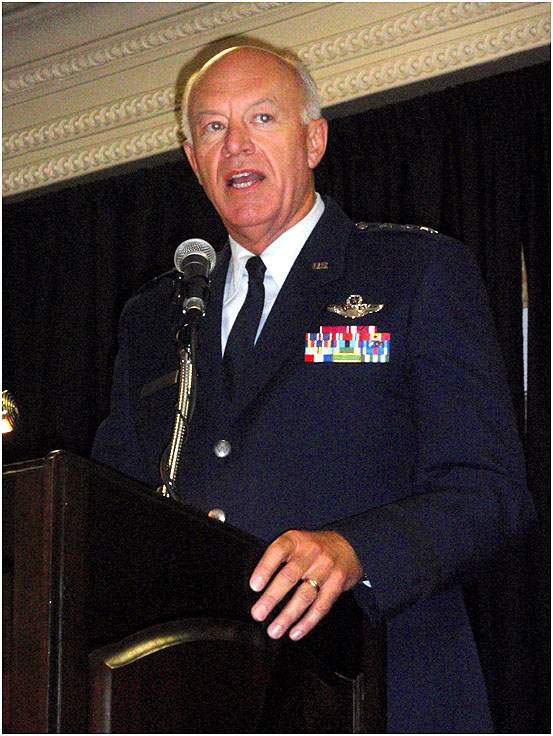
Character, values needed in future leaders

Lt. Gen. Harry M. Wyatt III, the director of the Air National Guard, speaks to attendees about the character and values needed in future leaders at the 38th annual Tuskegee Airman Inc. National Conference Aug. 7 in Las Vegas.